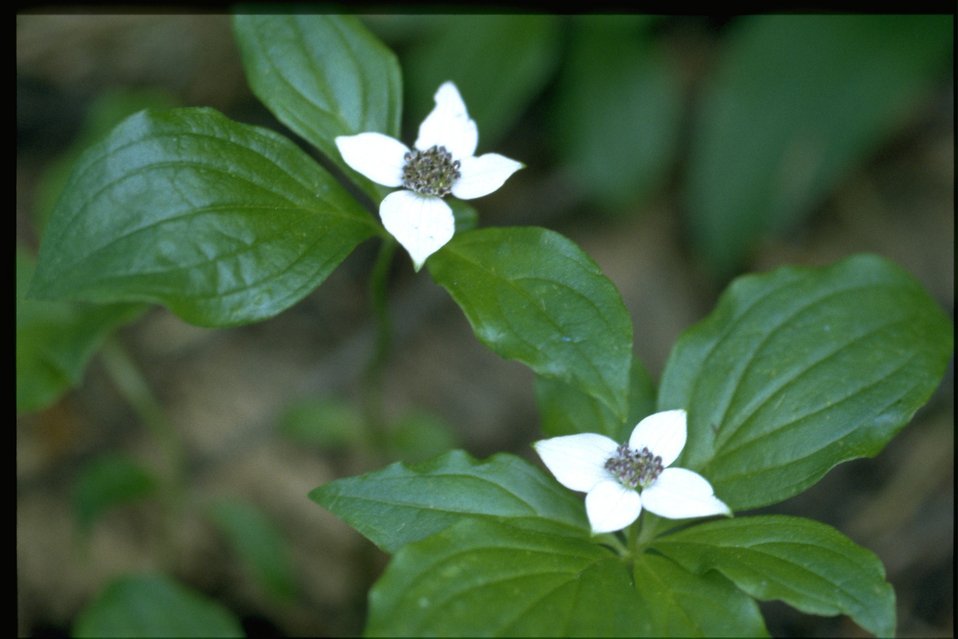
Medium shot of Cornus canadensis.